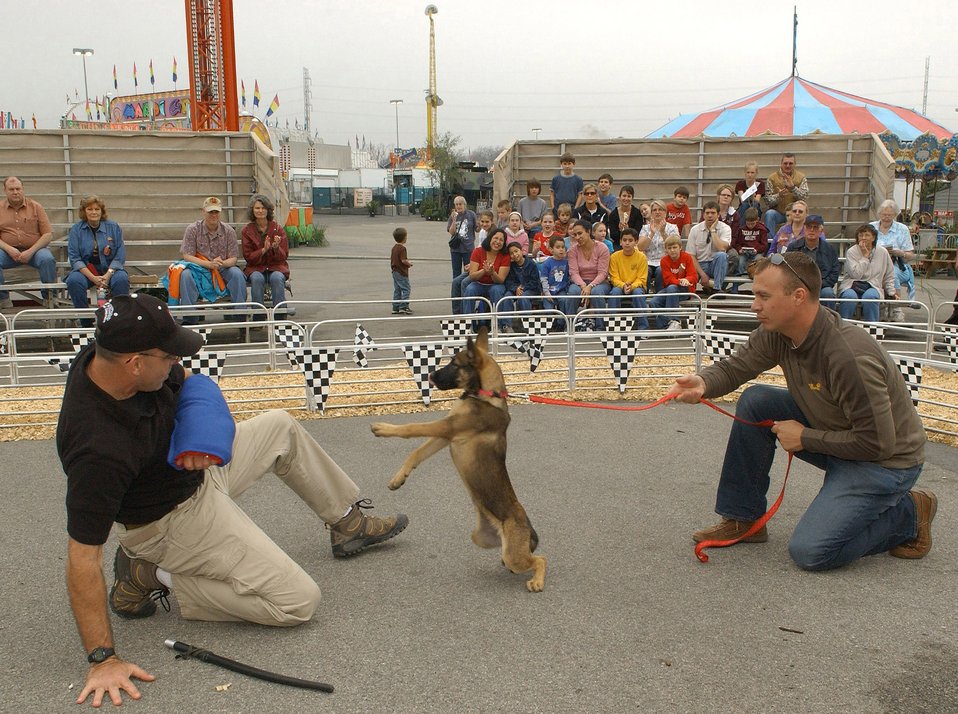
Get him!

Rodney Sparkowich (left) and Tim Bartlett show off Xaria, one of the puppies in the military working dog program, at the San Antonio Stock Show and Rodeo. The military working dog demonstration was one of the highlights of outdoor activities at the rodeo.